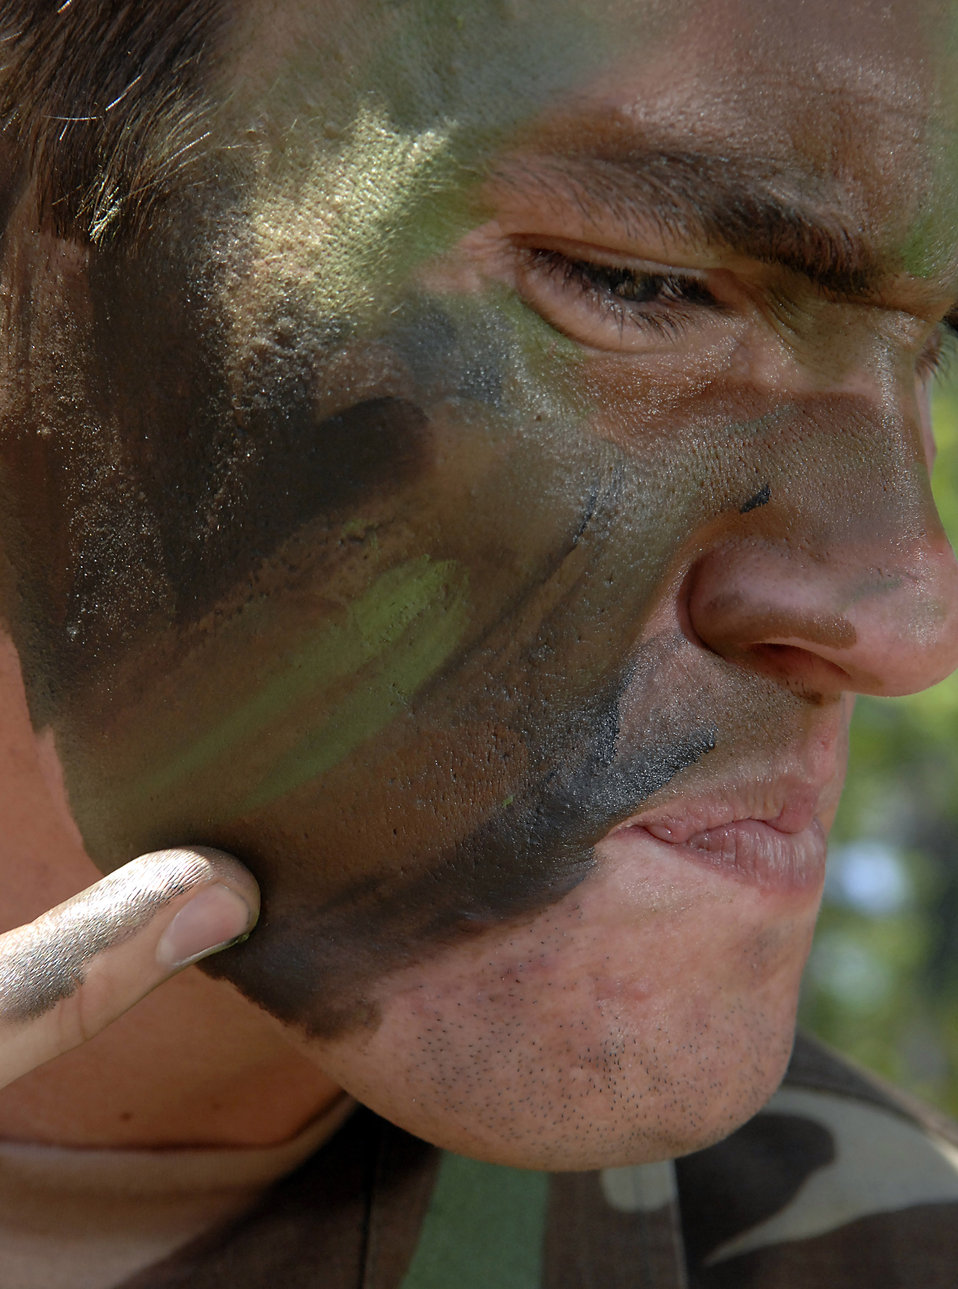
Putting on a game face

Senior Airman Jake Quigg prepares for a training scenario at Hurlburt Field air Force Base, Fla. Airman Quigg is a combat controller with the 720th Special Operations Squadron.